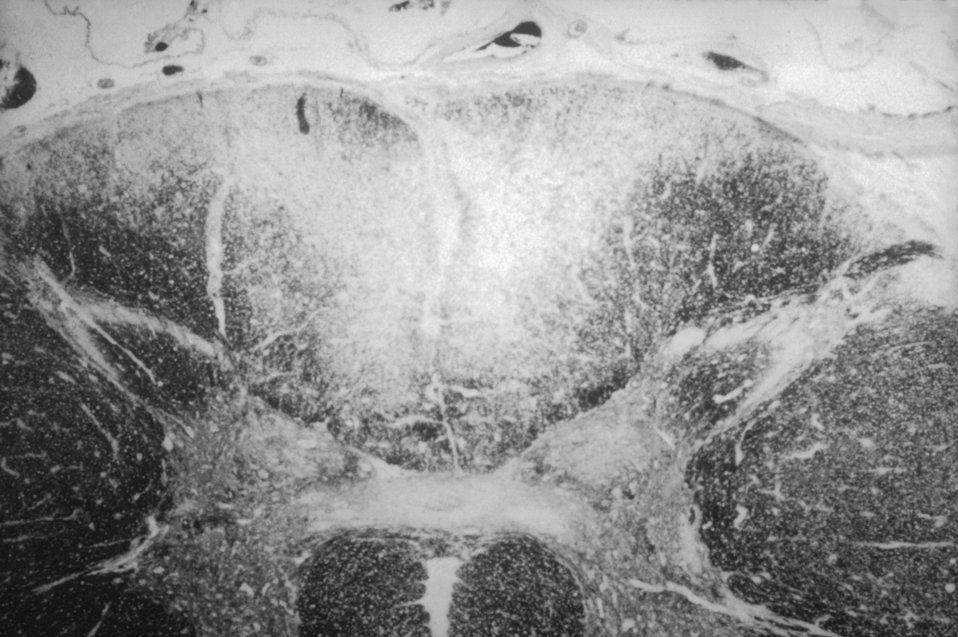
Demyelinization of the posterior columns of the spinal cord known as 'Tabes Dorsalis', or Tabetic Neurosyphilis.